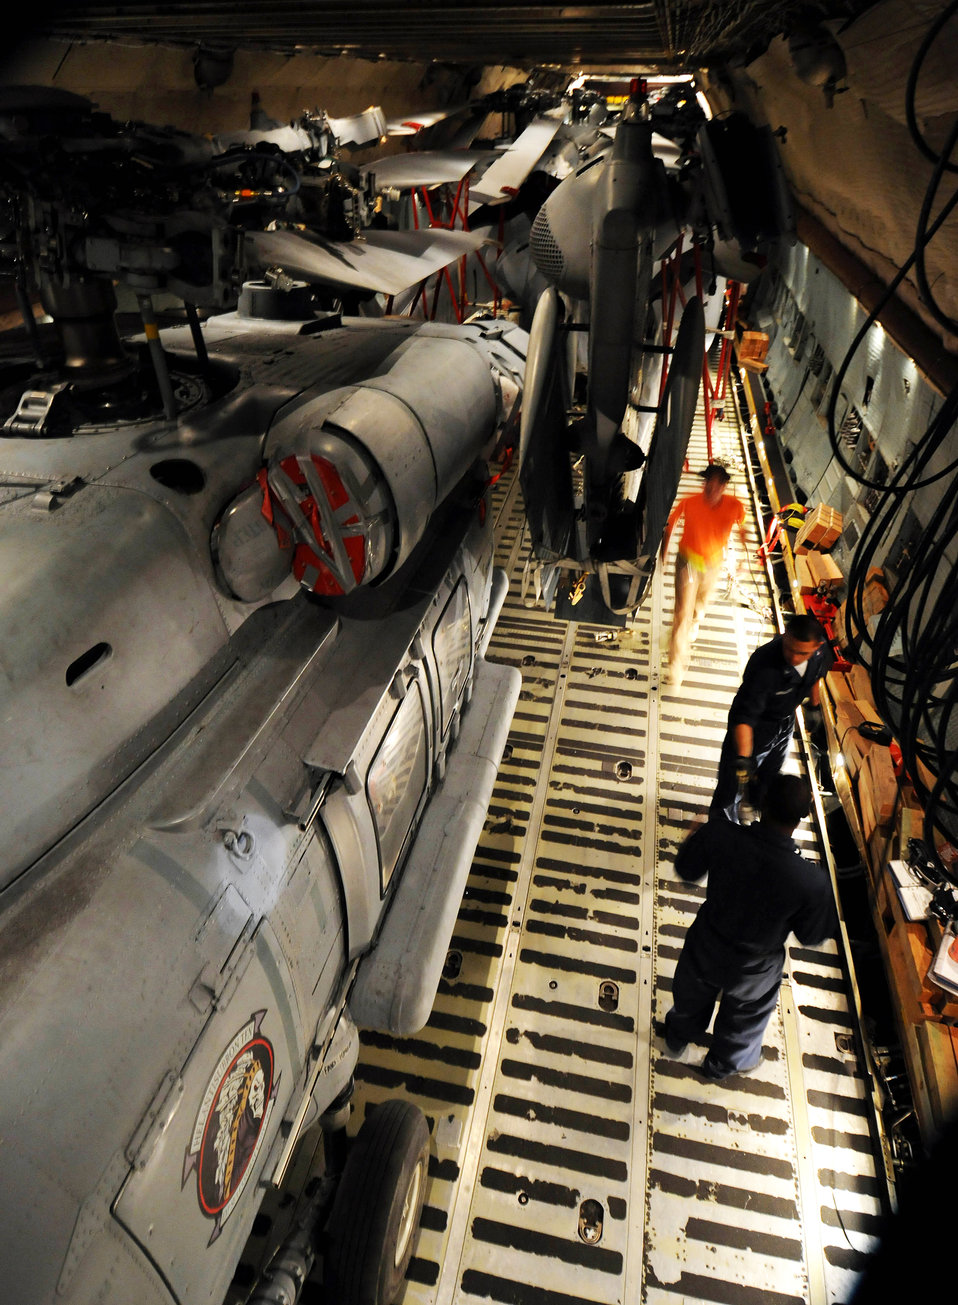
Just the right fit

A load team conducts a final inspection after loading three MH-60S Knighthawk and two SH-60H Sea Hawk helicopters into a C-5 Galaxy March 13 on the flightline at Andersen Air Force Base, Guam. Airmen from the West Virginia Air National Guard's 167th Airlift Wing and the 734th Air Mobility Squadron at Anderson Air Force Base, Guam, along with Sailors from Helicopter Sea Combat Squadron TWO-FIVE at Guam's A.B. Won Pat International Airport loaded the helicopters for transport to Naval Air Station North Island in San Diego.